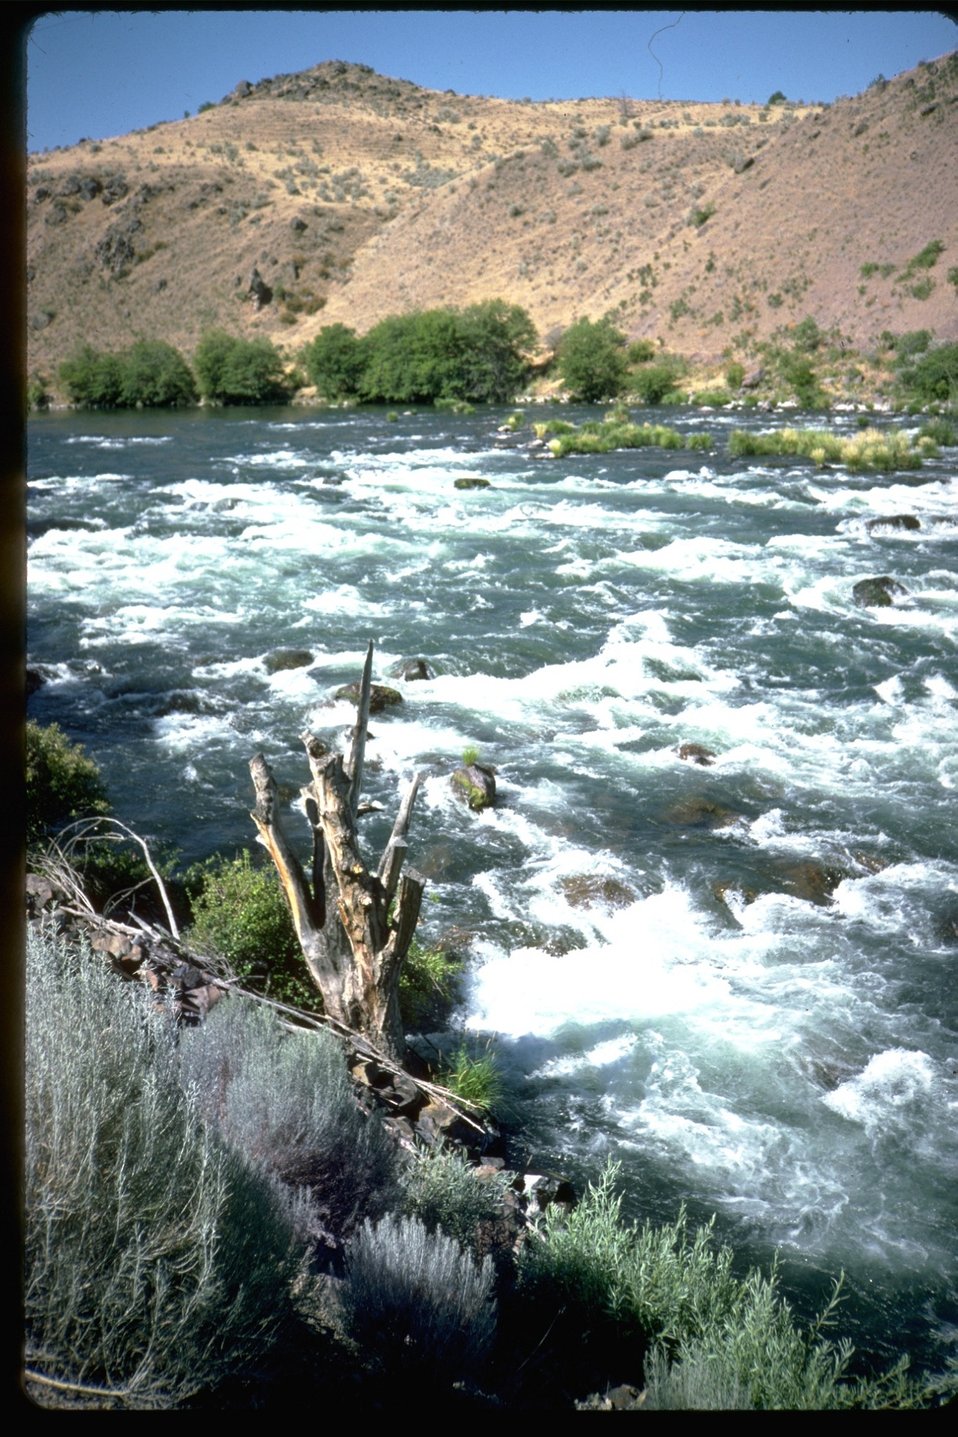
The Whitehorse Rapids in the Lower Deschutes River.